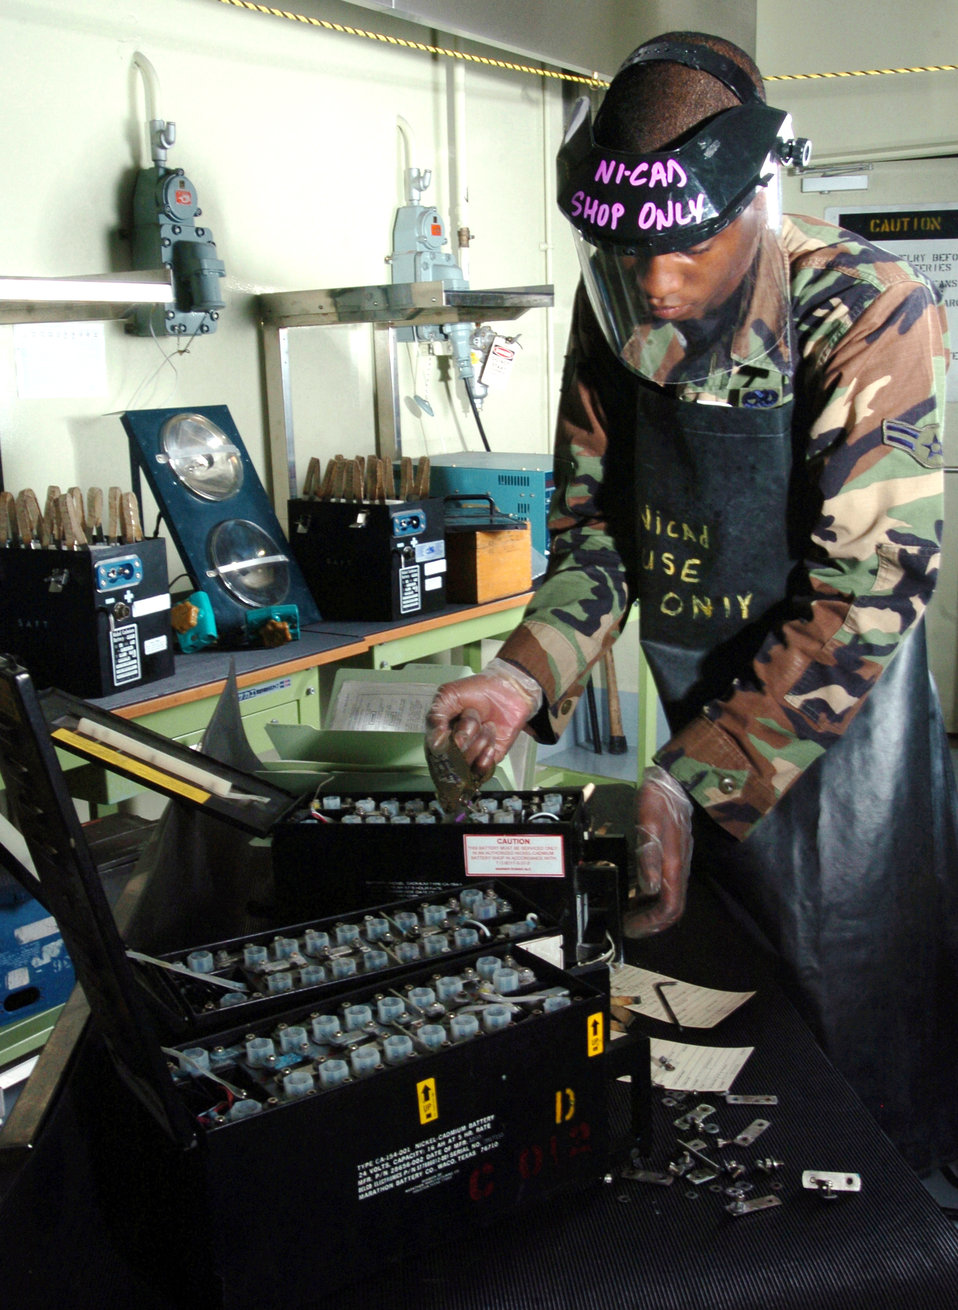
Battery check

YOKOTA AIR BASE, Japan -- Airman 1st Class Chad Bowen inspects a C-17 Globemaster III's batteries for corrosion. He is an electro and environmental technician who maintains cryogenic and compressed gas units. Technicians here repair life raft inflation devices, small gas oxygen cylinders and batteries. Airman Bowen is assigned to the 374th Maintenance Squadron's accessories flight.